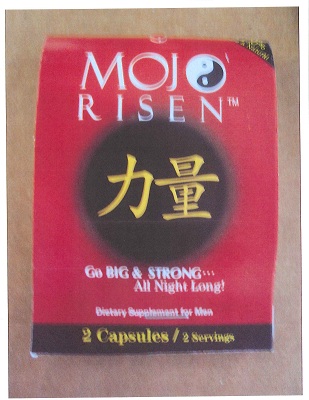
20140501163224544pic5 Page 4